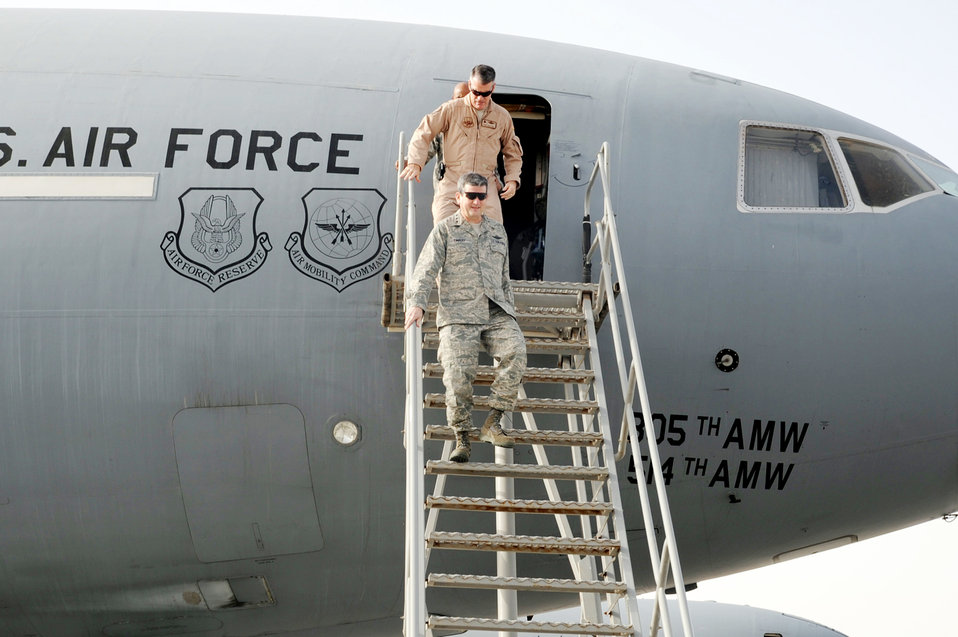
Mobility general visits Airmen in Southwest Asia

Lt. Gen. Vern M.